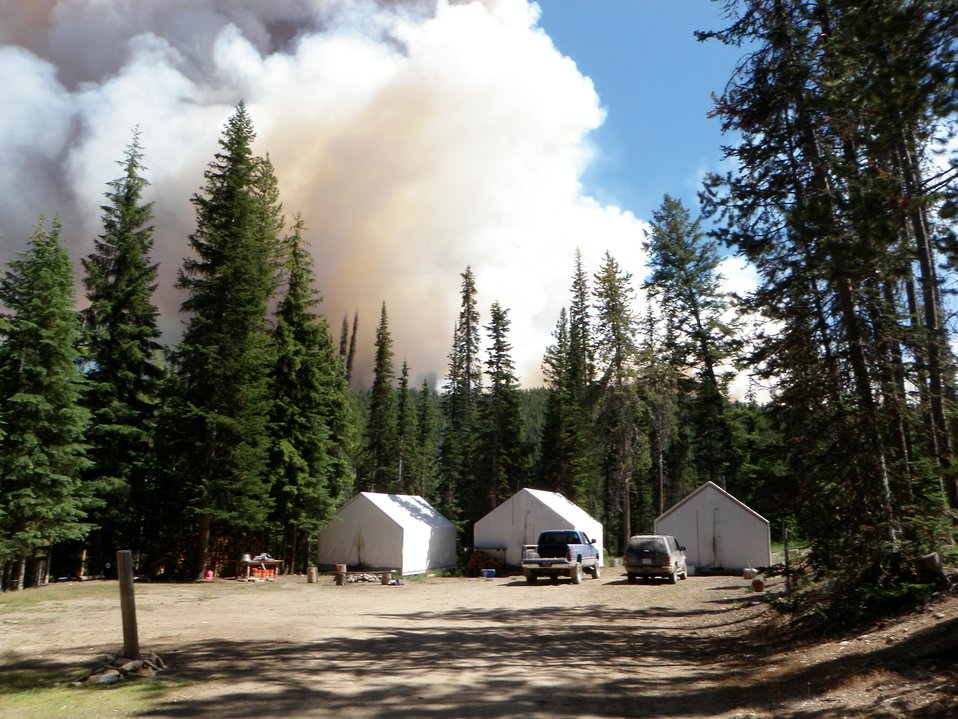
The Incident Command Post (ICP) is set up at the Gold Pan Fire in the Bitterroot National Forest. The Gold Pan Fire in the Bitterroot National Forest near Conner, MT began by lightning on Jul. 16, 2013 by lighting have consumed approximately 16,330 acres.